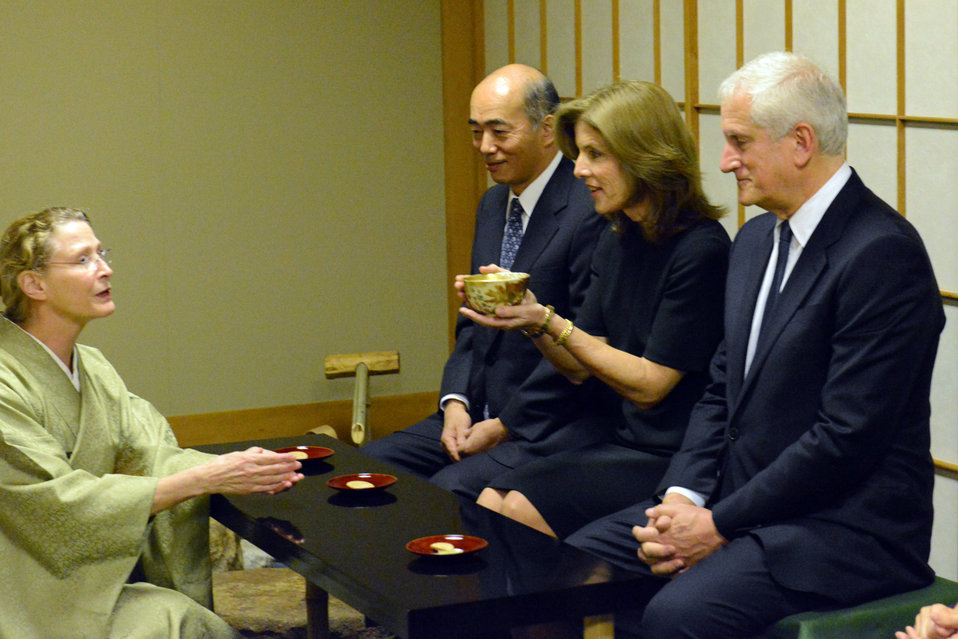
Ambassador Kennedy Participates in a Tea Ceremony

Japanese Ambassador to the United States Kenichiro Sasae, left, U.S. Ambassador to Japan Caroline Kennedy and her husband Dr. Edwin Schlossberg take part in a tea ceremony at the Japanese Ambassador's residence in Washington, D.C., on November 12, 2013.